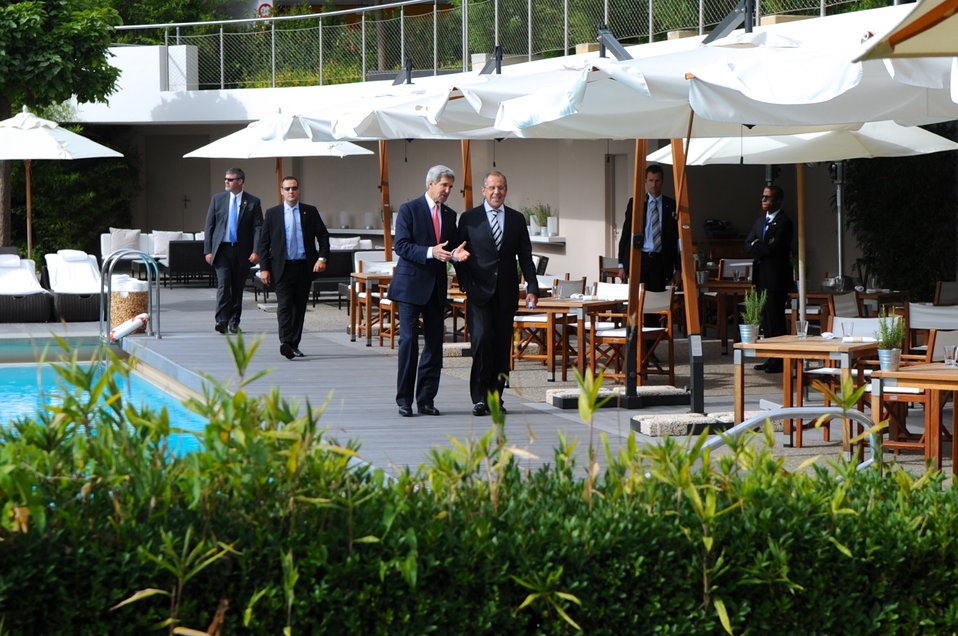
Secretary Kerry, Foreign Minister Lavrov Take Walk After Syria Agreement

U.S. Secretary of State John Kerry takes a walk with Russian Foreign Minister Sergey Lavrov after the two finalized an agreement related to ridding Syria of chemical weapons during an impromptu poolside negotiating session in Geneva, Switzerland, on September 14, 2013.